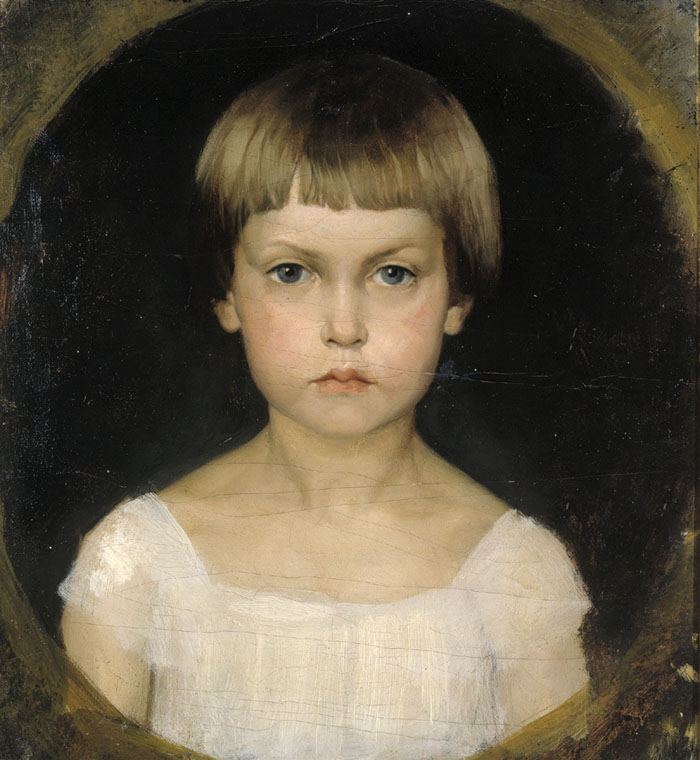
Albert Edelfelt - Berta Edelfeltin muotokuva